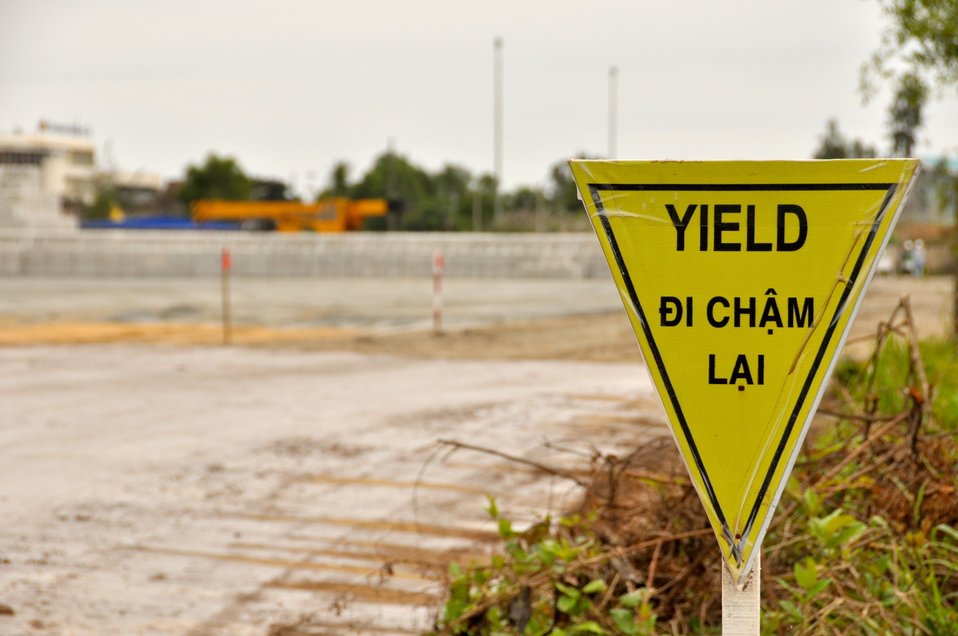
Site Preparation for Environmental Remediation of Dioxin Contamination at Danang Airport

Danang Airport, January 22, 2013